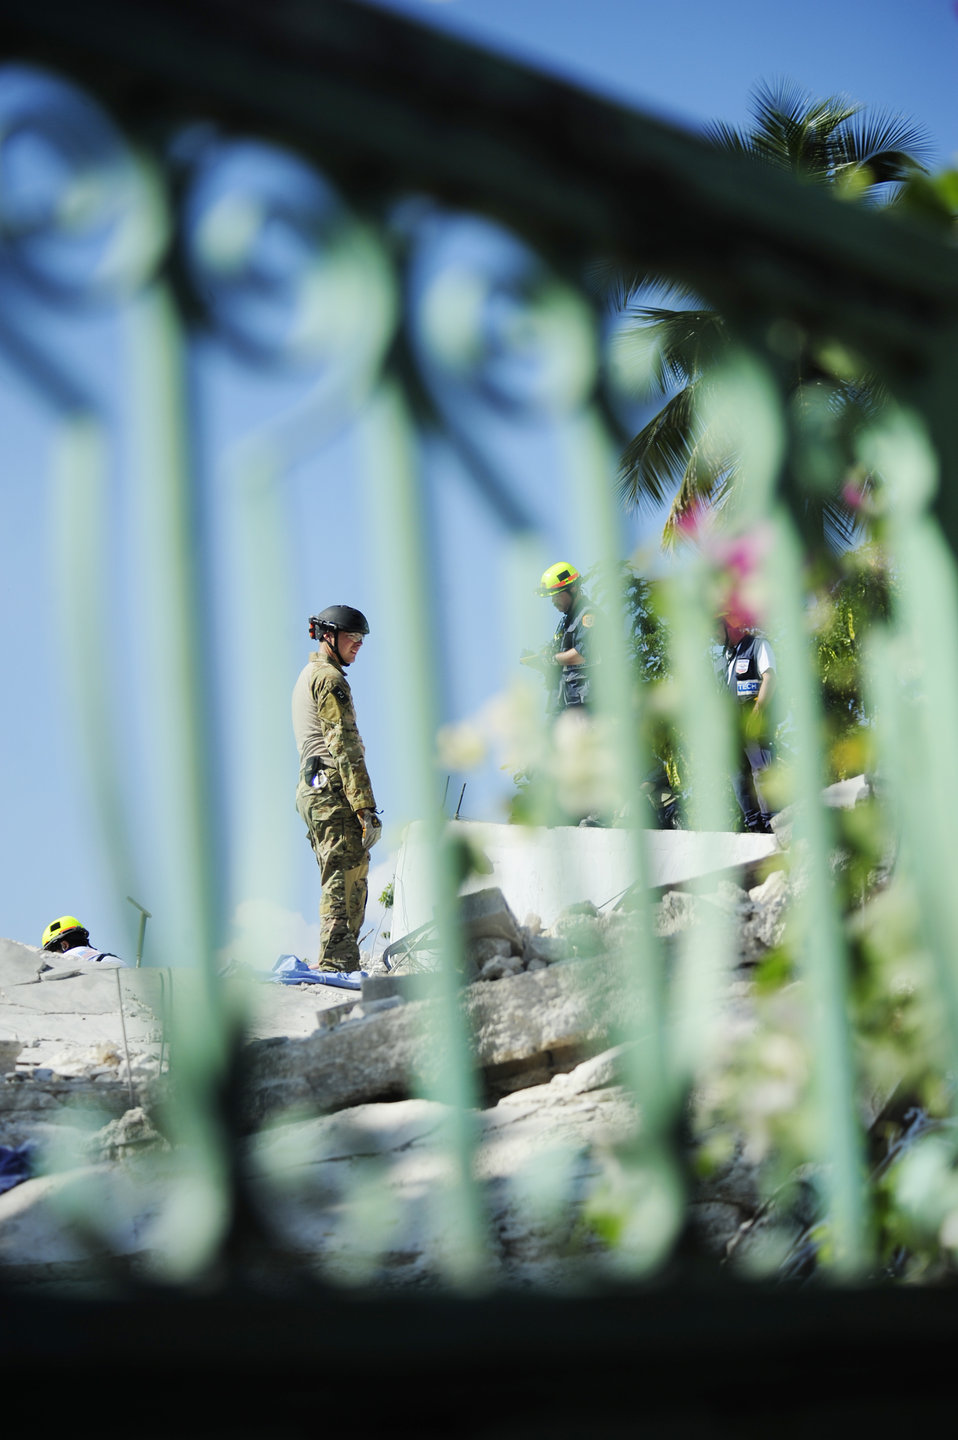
Haiti Earthquake Relief

A pararescueman stands on top of a demolished building during search and rescue operations Jan. 17, 2010, in Port-au-Prince, Haiti. The pararescueman is assigned to the 23rd Special Tactics Squadron at Hurlburt Field, Fla. Department of Defense assets have been dispatched to Haiti to assist with humanitarian assistance and disaster relief after a magnitude 7 earthquake hit the country Jan. 12, 2010.